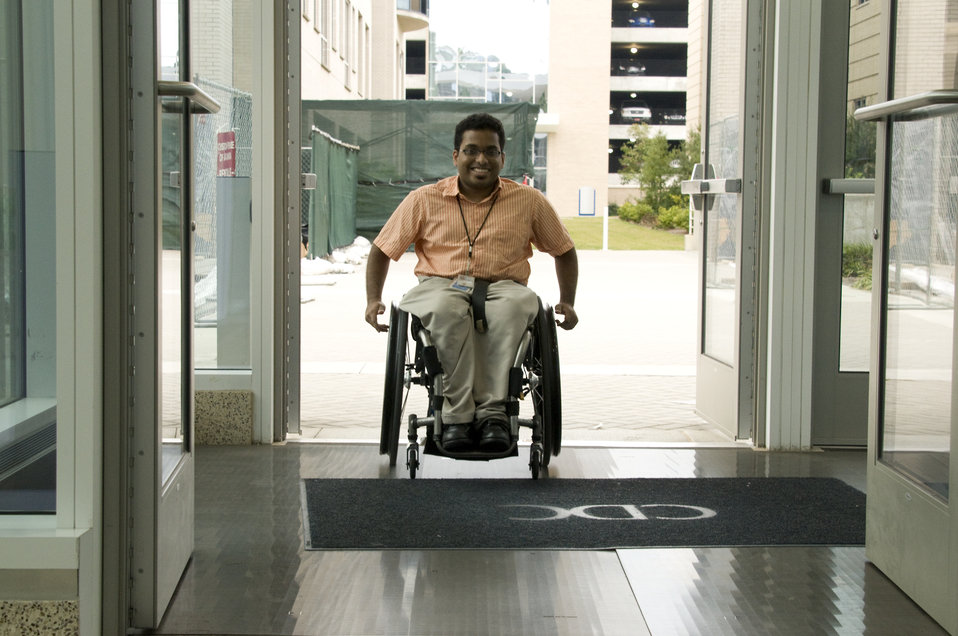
The man depicted here was in the process of entering a building on one of the Centers for Disease Control and Prevention's (CDC) campuses. He was seated in a wheelchair after having triggered the mechanized doors to open by using an easily-accessible push button door switch-pad.